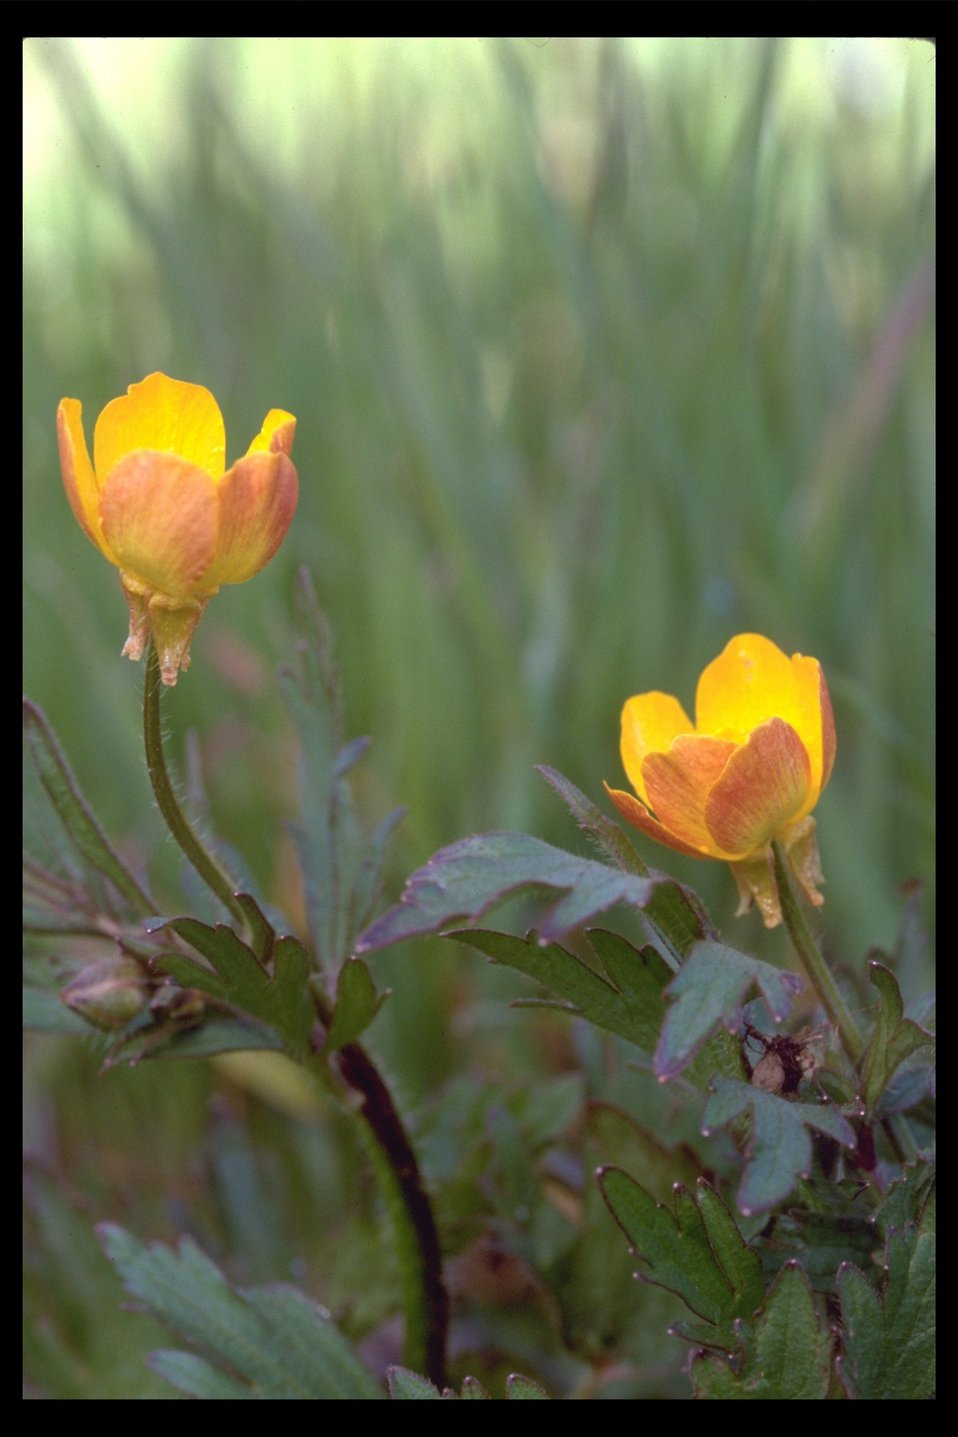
Southern Oregon Buttercup (Ranunculus austro-oreganus) at Shady Cove near the Rogue River.